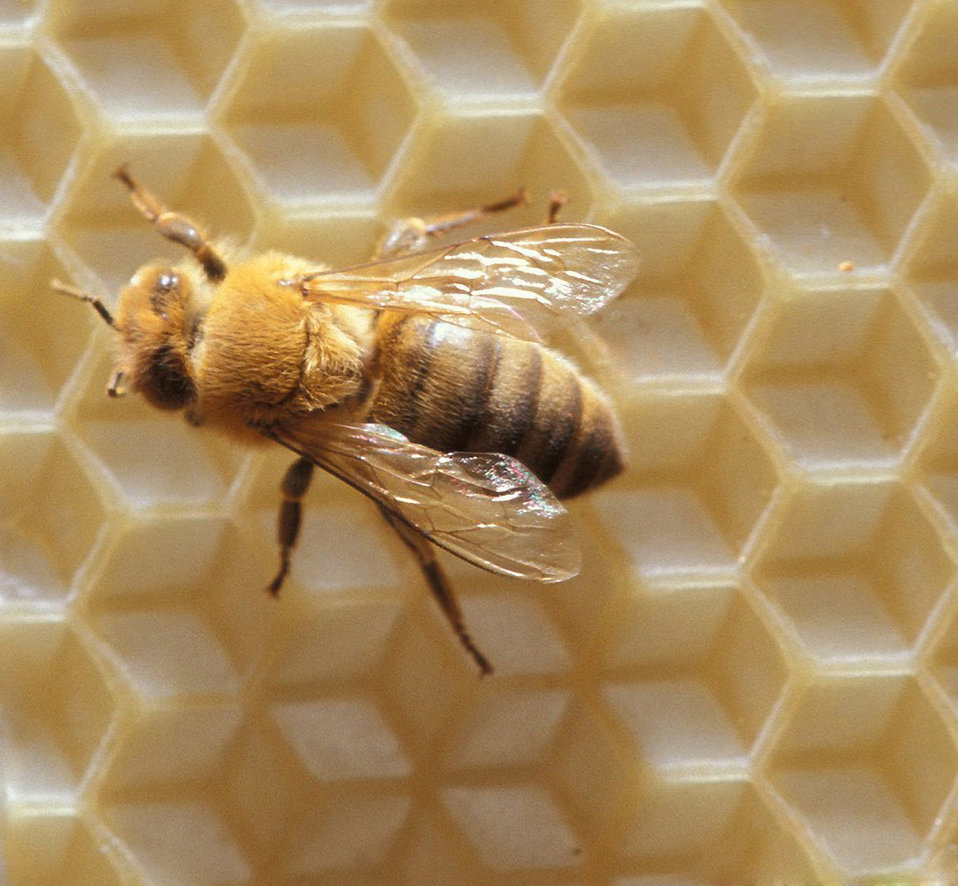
Adult honey bee at work on honeycomb. Bees are one of nature’s many pollinators for flowers and crops and are crucial in production for fruits and vegetables. Some of the crops pollinated by bees are apples, squash, and almonds. Honeybees are responsible for pollinating approximately $15 billion worth of crops in the U. S. each year. The U. S. Department of Agriculture (USDA) Agricultural Research Service (ARS) and Natural Resource Conservation Service (NRCS) are working on ways to mitigate the decline of the bee population by coordinating pollination research, conservation, and education among USDA agencies and their partners.